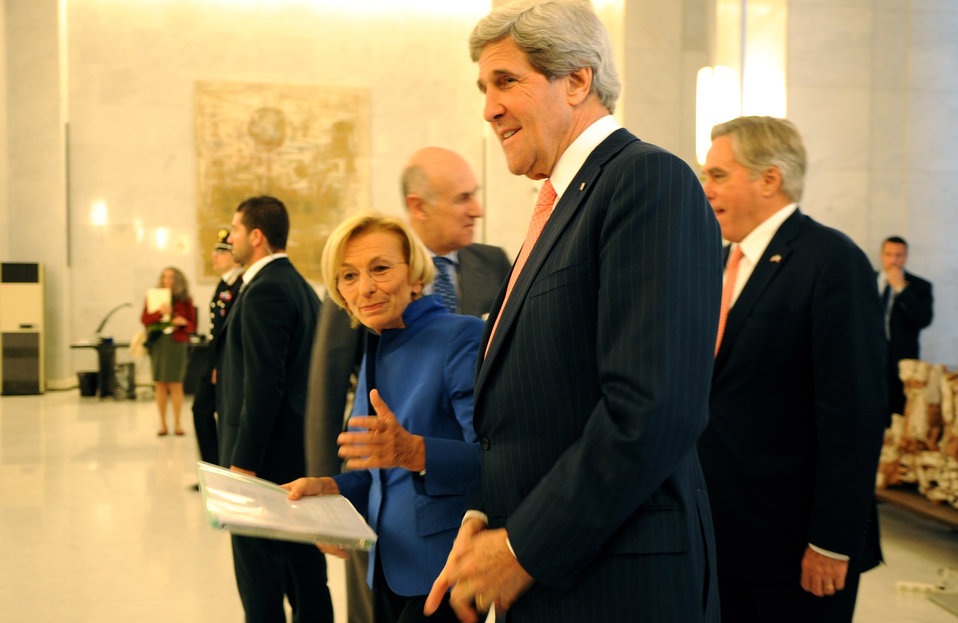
Secretary Kerry Walks With Italian Foreign Minister Bonino

U.S. Secretary of State John Kerry and Italian Foreign Minister Emma Bonino walk to their meeting in Rome, Italy, on May 9, 2013.